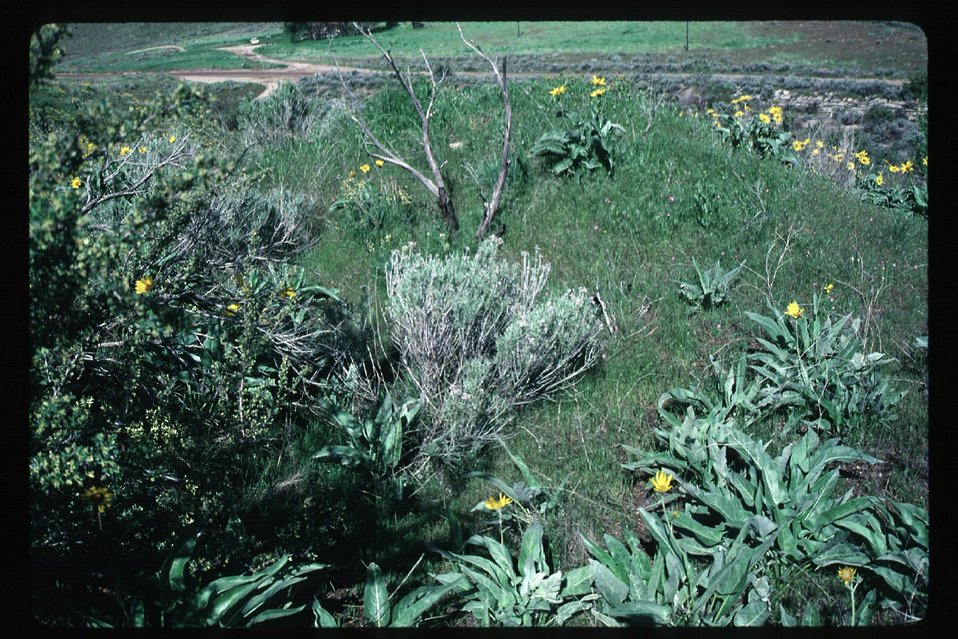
Wildflowers Scenic LSRD Lower Snake River District